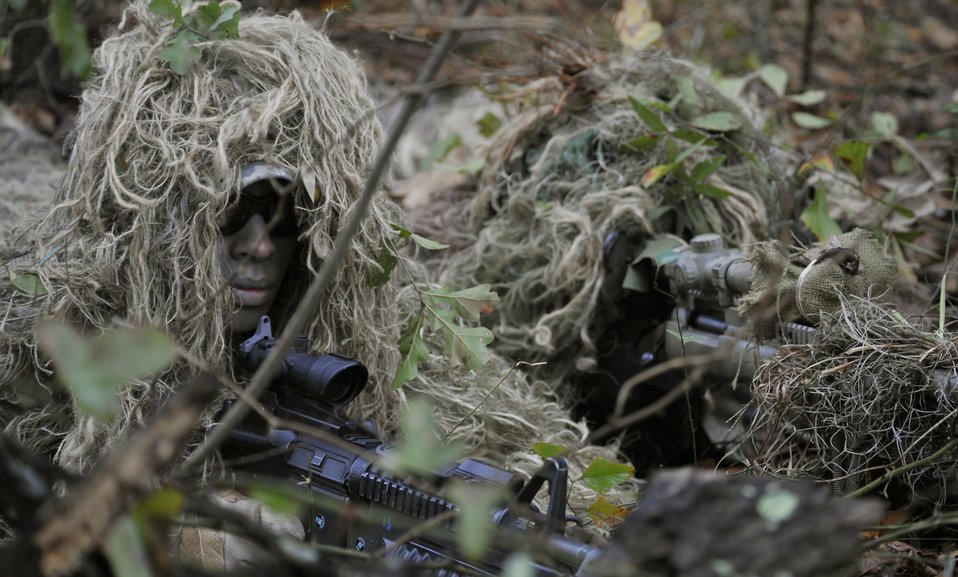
Gotcha!

Two sniper team Airmen assigned to the 822nd Base Defense Squadron prepare to provide cover fire for their team members during a 'military operations in urban terrain' training village demonstration Feb. 10, 2011, at Moody Air Force Base, Ga.